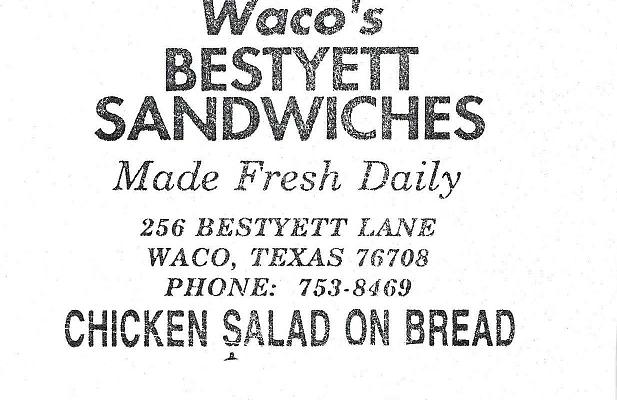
RECALLED - Waco's Bestyet Sandwhiches Chicken Salad on Bread

April 8 2011 - Product Recall - Waco’s Bestyett Sandwiches issues a Voluntary Recall of Pimento Cheese Sandwiches and Chicken Salad Sandwiches due to Undeclared EGGS.